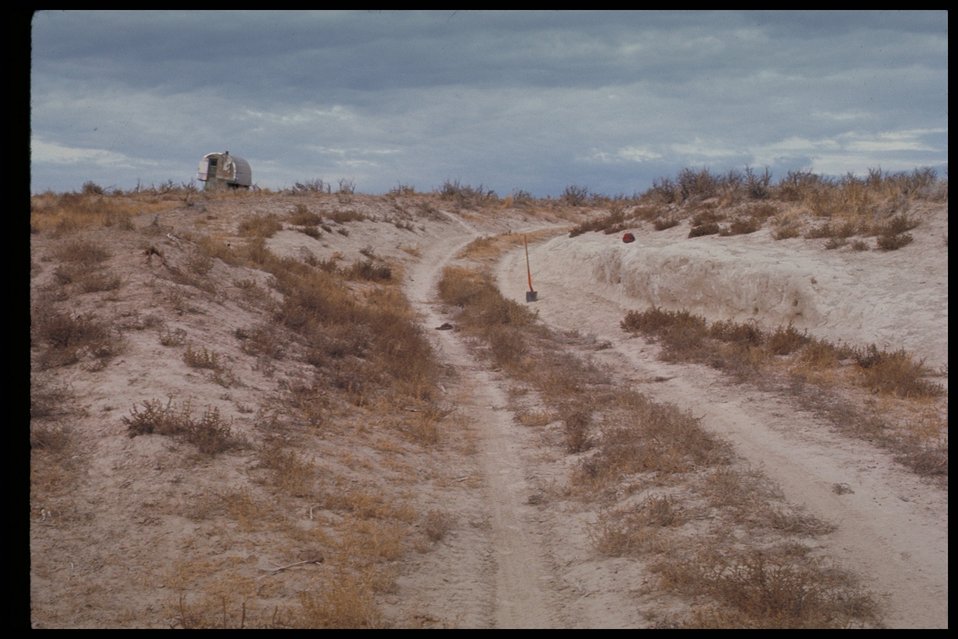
Trail leaves desert and leaves rut Abandoned Sheep camp Oregon Trail Lower Snake River District